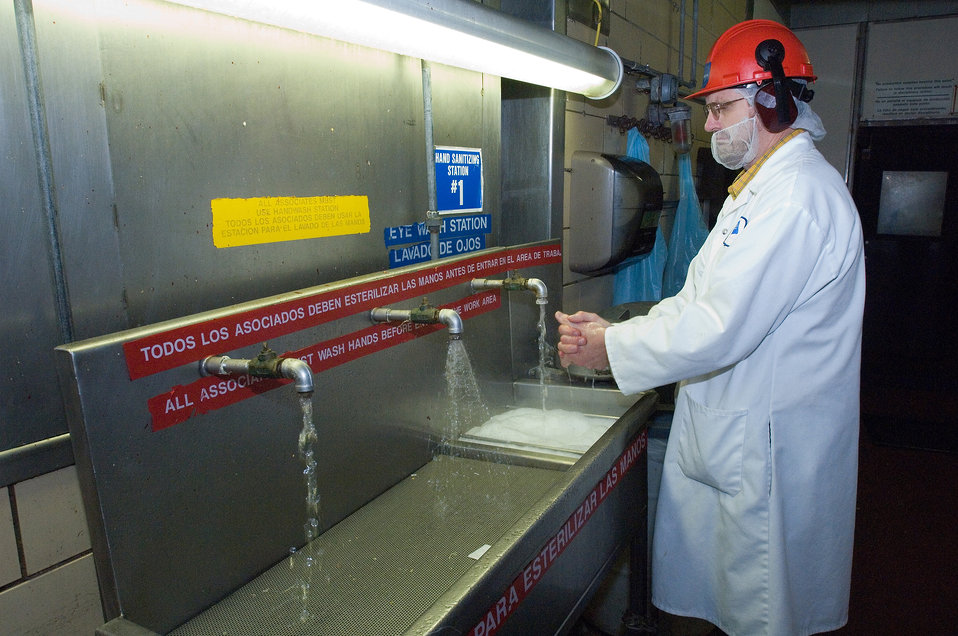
U.S. Department of Agriculture (USDA), Food Safety Inspection Service (FSIS) inspector at a poultry processing facility in Accomac, Virginia checking for cleanliness and testing poultry for the Avian Influenza (AI) virus.